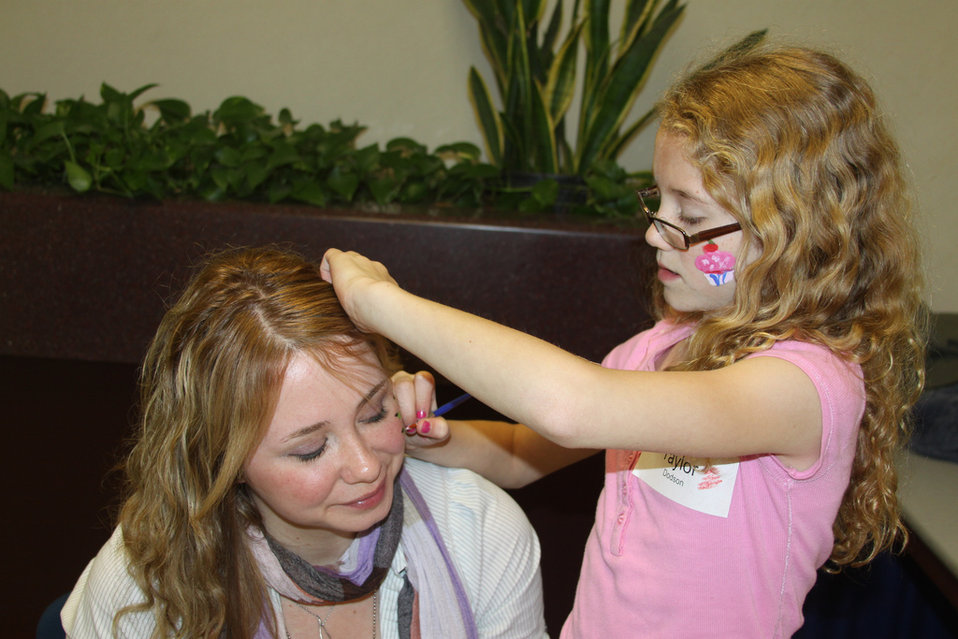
Liz Meckes Facepainting